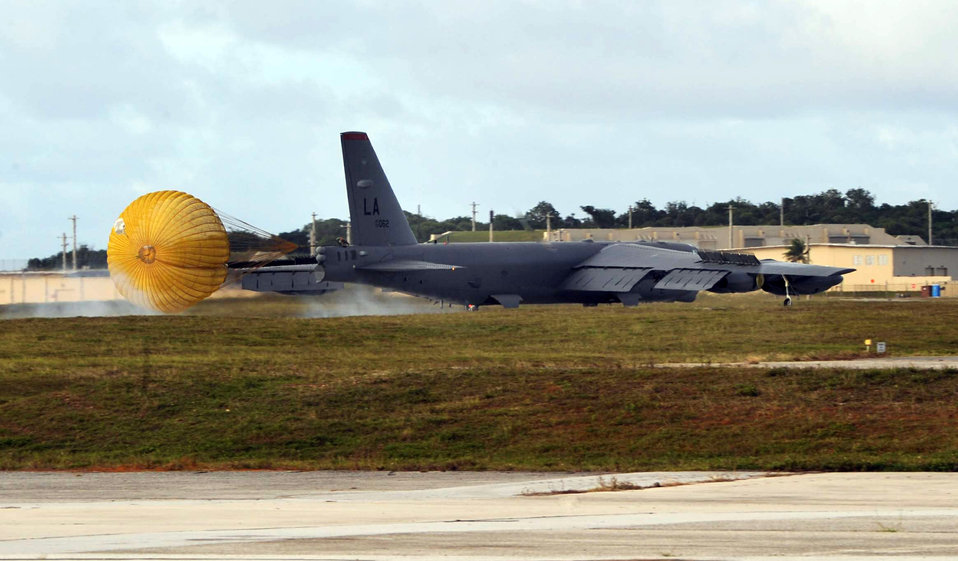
Barksdale bombers arrive at Andersen

One of three B-52 Stratofortress bombers from Barksdale Air Force Base, La., lands after a 17-hour flight May 30 at Andersen Air Force Base, Guam. The bombers, assigned to the 96th Expeditionary Bomb Squadron, are here in support of the continuous bomber presence in the Western Pacific.